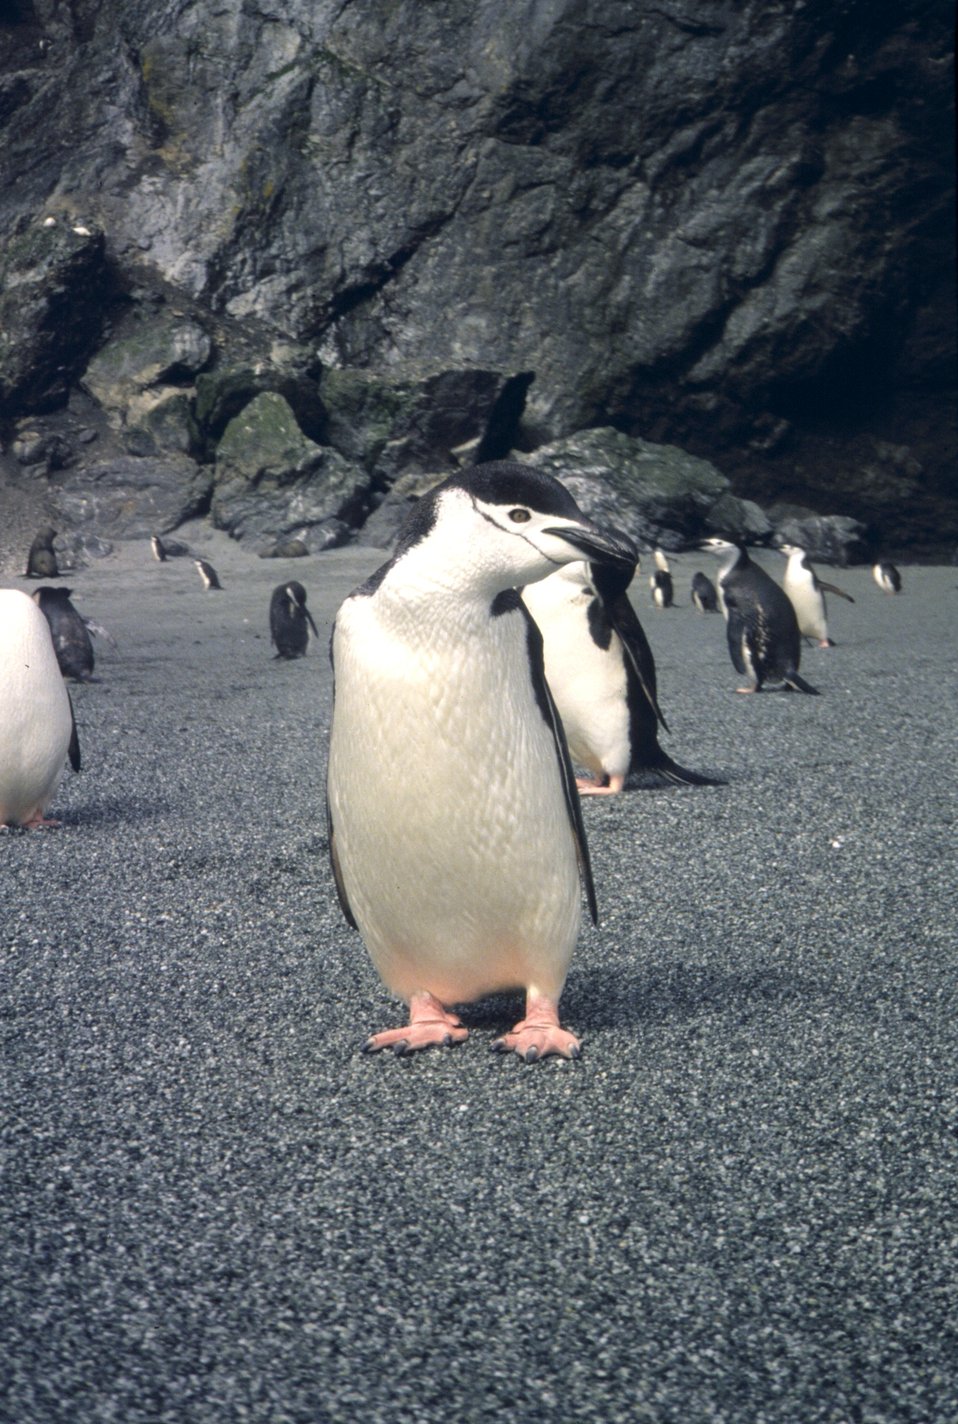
Chin strap penguin.